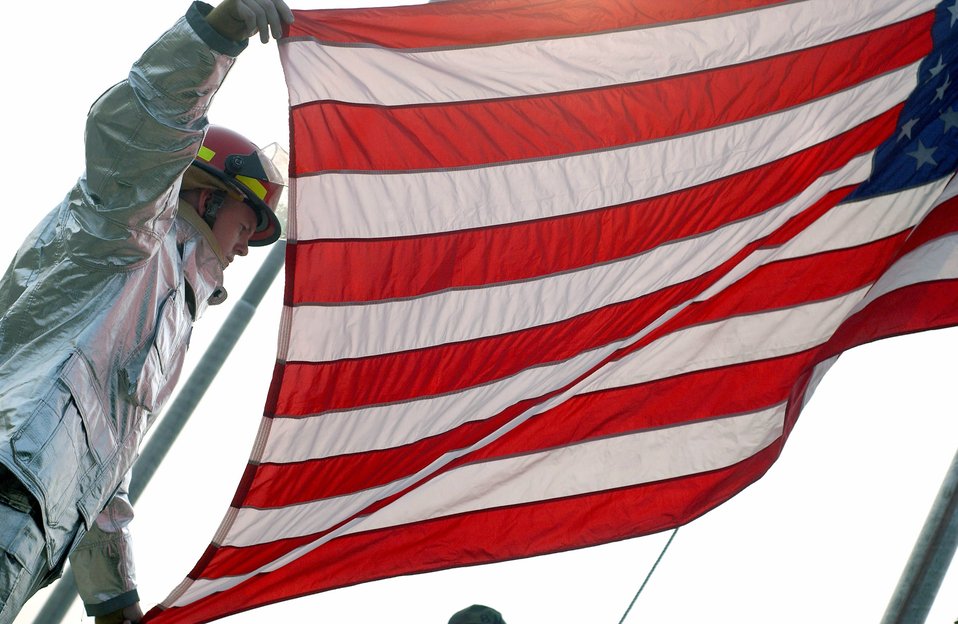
Red, white and blue pride

Tech. Sgt. Jason Rosenbaum helps raise the flag during a Sept. 11, 2007, remembrance ceremony at Kunsan Air Base, South Korea. Kunsan AB officials marked the sixth anniversary of the terrorist attacks in New York City, the Pentagon and Shanksville, Pa.